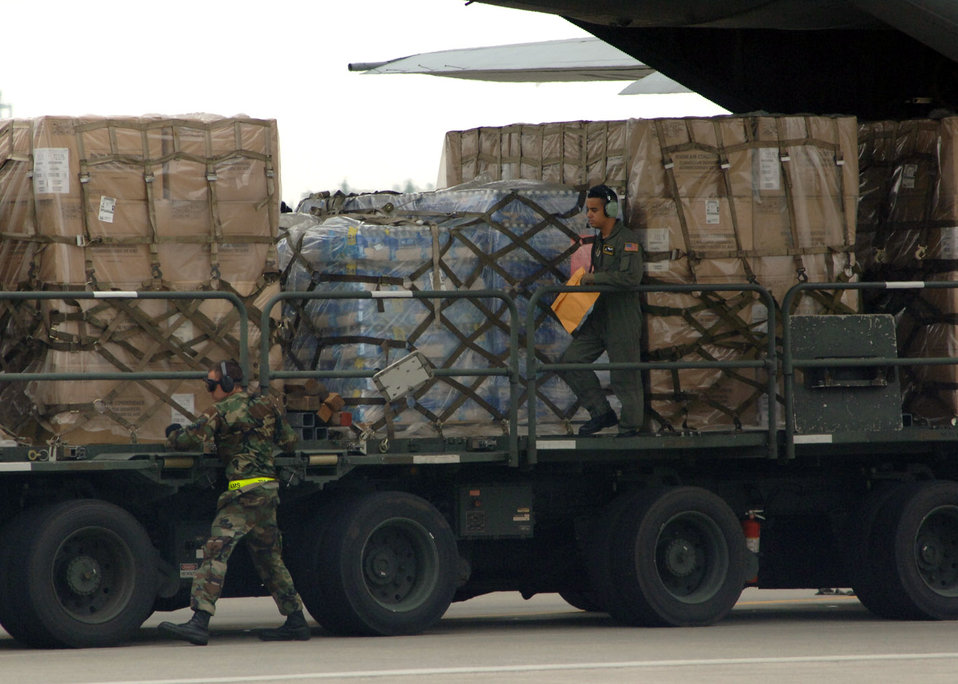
Yokota Airmen aid Japan after earthquake

Airmen from the 374th Airlift Wing and 730th Air Mobility Squadron load supplies onto a C-130 Hercules for shipment to Niigata Airport July 18 at Yokota Air Base, Japan. The Airmen provided 10,000 pounds of water and 100 air-conditioning units to Japan after an earthquake hit one of Japan's largest city on the Sea of Japan.